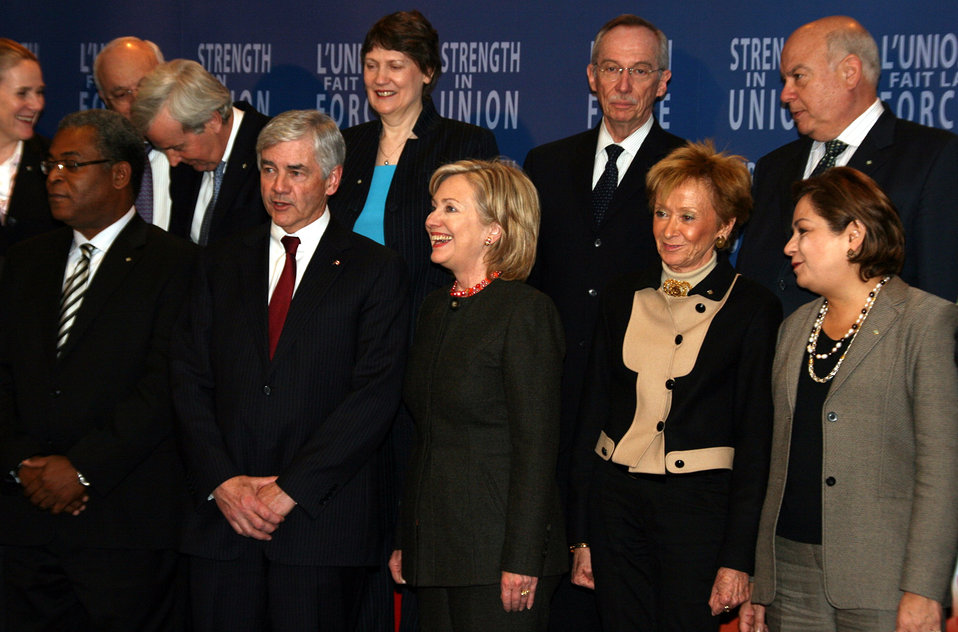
Secretary Clinton in Montreal

U.S. Secretary of State Hillary Rodham Clinton in group photo for attendees of meetings regarding the Haiti Earthquake hosted by the Government of Canada in Montreal, Canada January 25, 2010.